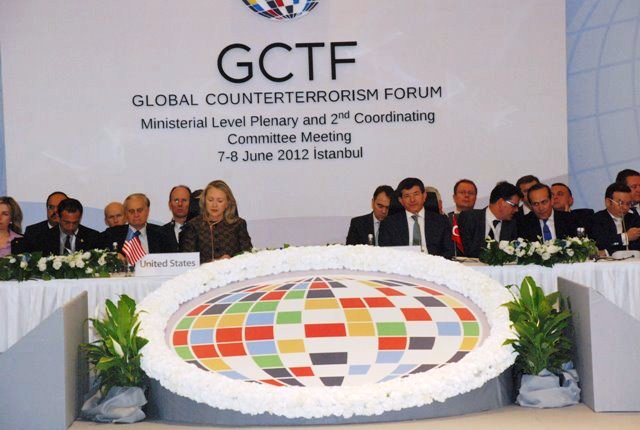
Secretary Clinton Delivers Remarks at Global Counterterrorism Forum

U.S. Secretary of State Hillary Rodham Clinton delivers remarks at the Global Counterterrorism Forum in Istanbul, Turkey, on June 7, 2012.